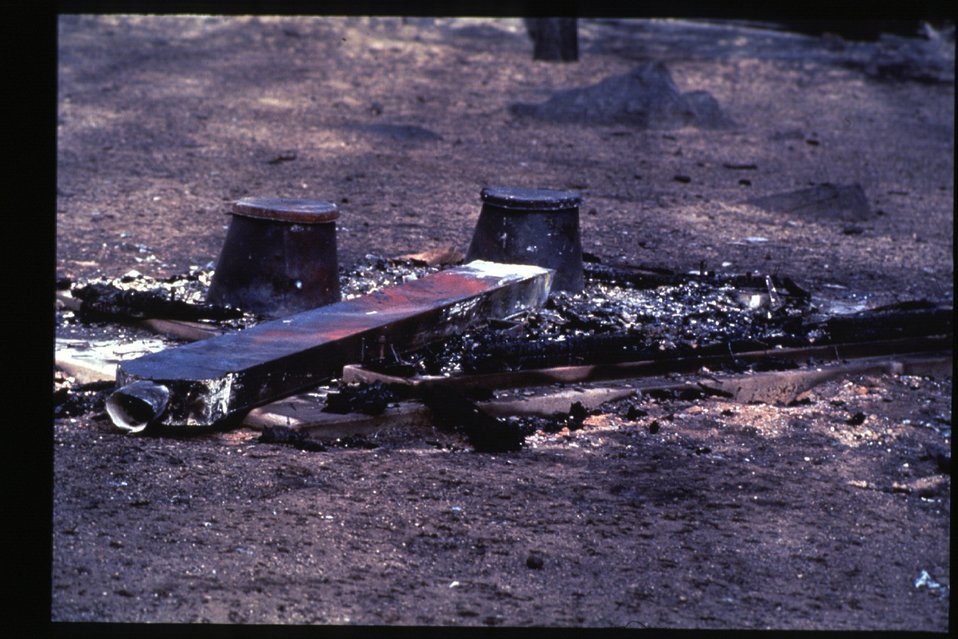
Boise Foothills Fire Danskin Mountains and South Fork of Boise River Burnt outhouse Four River Field Office LSRD Lower Snake River District